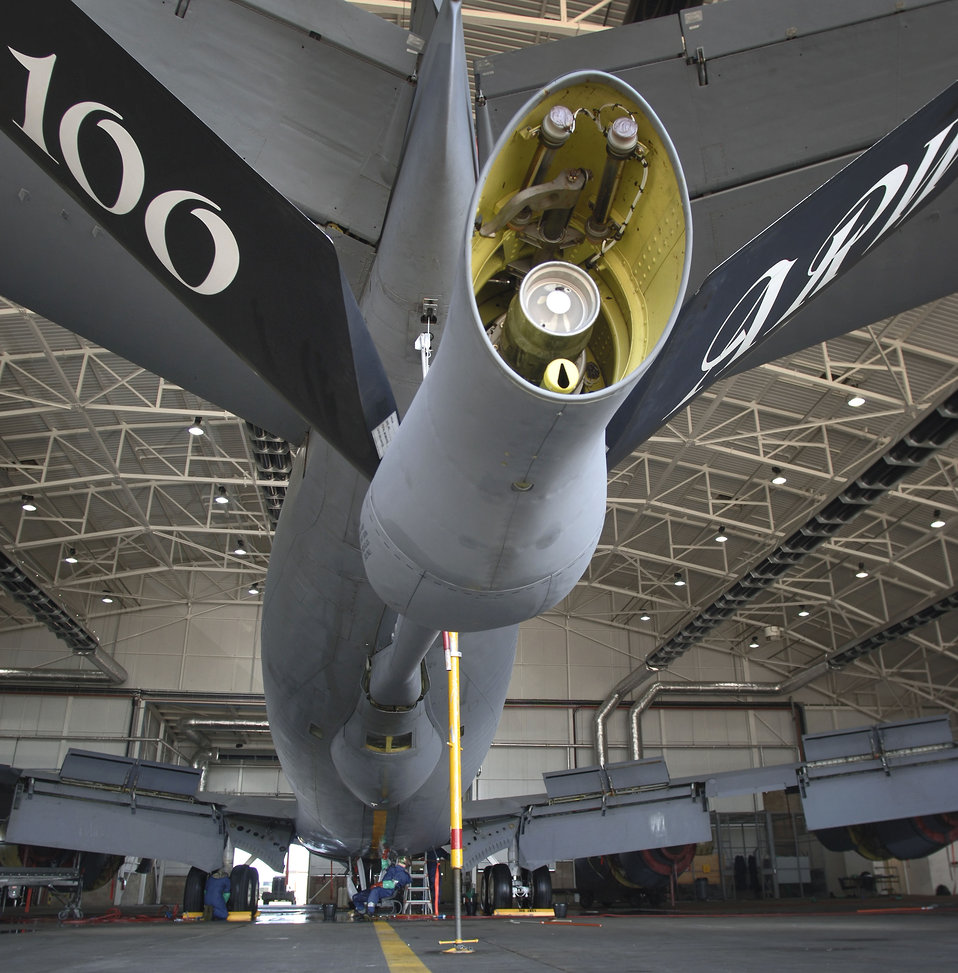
Mildenhall's tanker services in high demand

Senior Airman Jeremy Lueth hand-washes the centerline on the underbelly of a KC-135 Stratotanker at Royal Air Force Mildenhall, England, on July 24. The Airman is with the 100th Aircraft Maintenance Squadron. He spends 12 hours a day with a cleaning team that keeps the nearly 50-year-old aircraft corrosion free and looking its best.